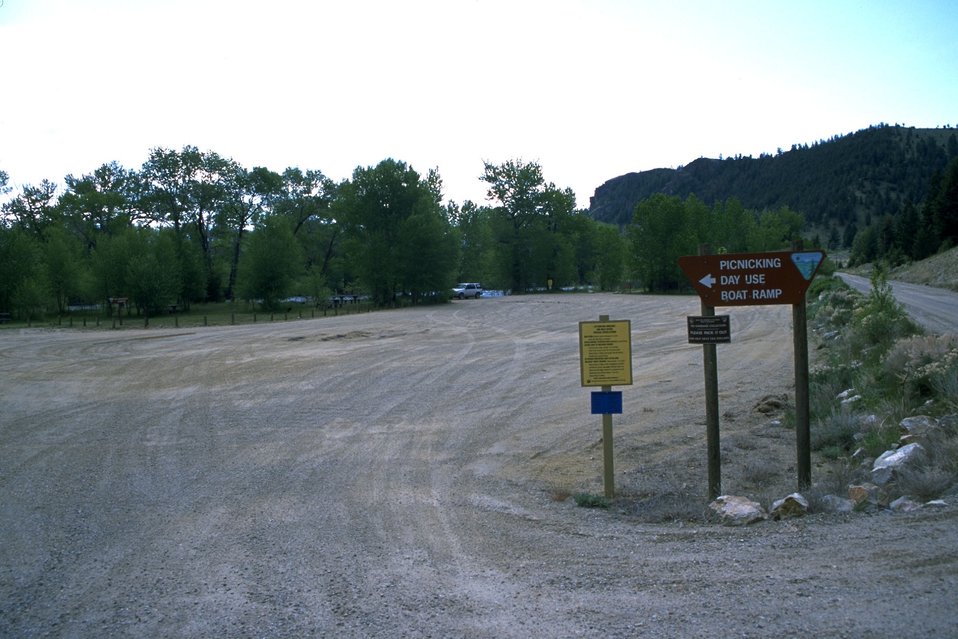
Entrance signs at the parking lot of the Divide Day Use Area